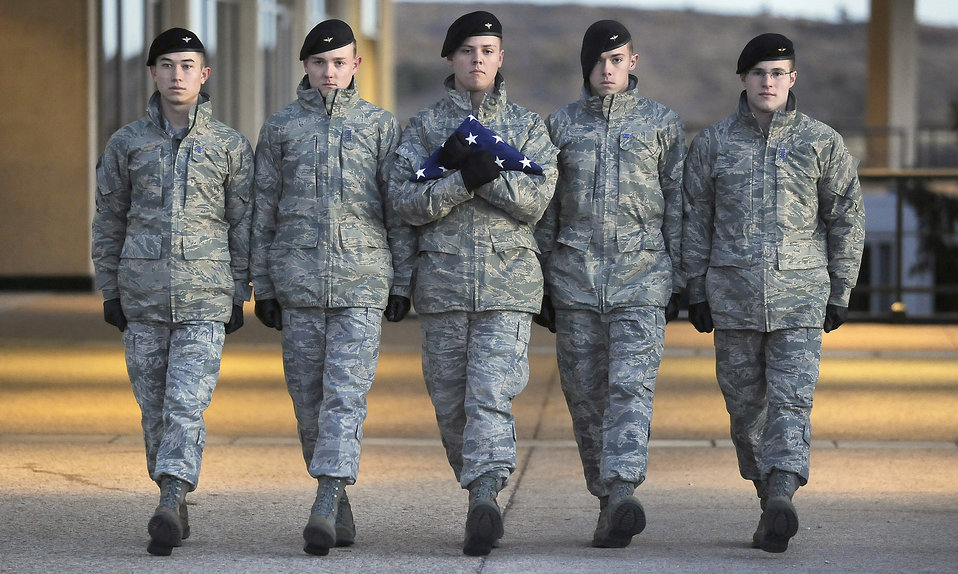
Academy, Eagle Scouts honor Challenger's memory

Members of a cadet honor guard conduct reveille Jan. 28, 2011, at the U.S. Air Force Academy, Colo., carrying a flag that survived the explosion of Space Shuttle Challenger 25 years ago that day. The honor guard is composed of cadets who are former Eagle Scouts.